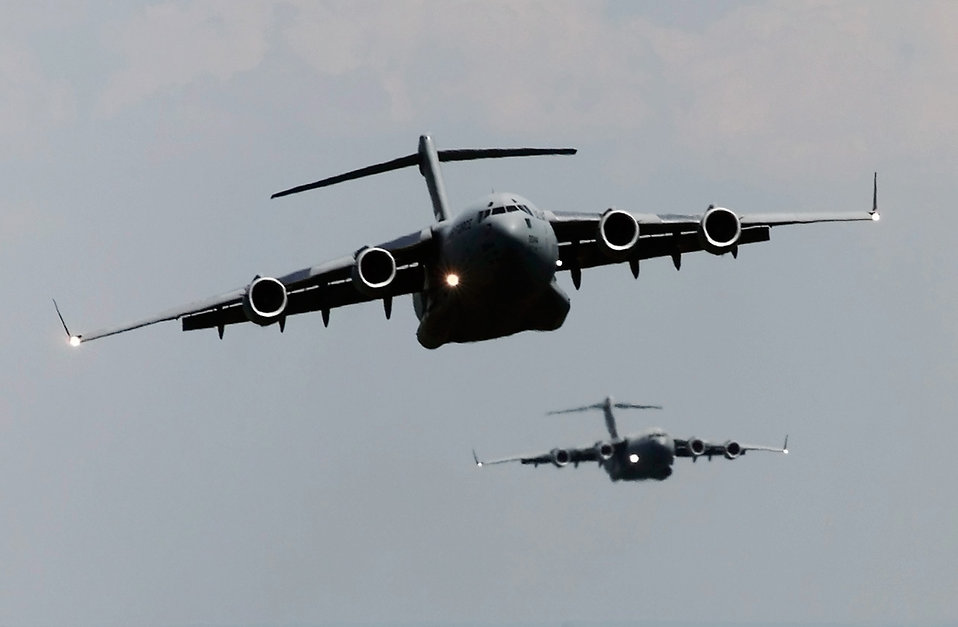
Peace Shield

FILE PHOTO -- A flight of C-17 Globemaster IIIs from the 437th Air Wing, Charleston Air Force Base, S.C., practices troop-drop procedures prior to picking up paratroopers from the 82nd Airborne Division Fort Bragg, N.C. on July 15, 2000. An international mix of 172 paratroopers are flying directly from Fort Bragg to the Ukraine are jumping in support of exercise Peace Shield 2000. Peace Shield is a Partnership for Peace exercise involving 22 countries.